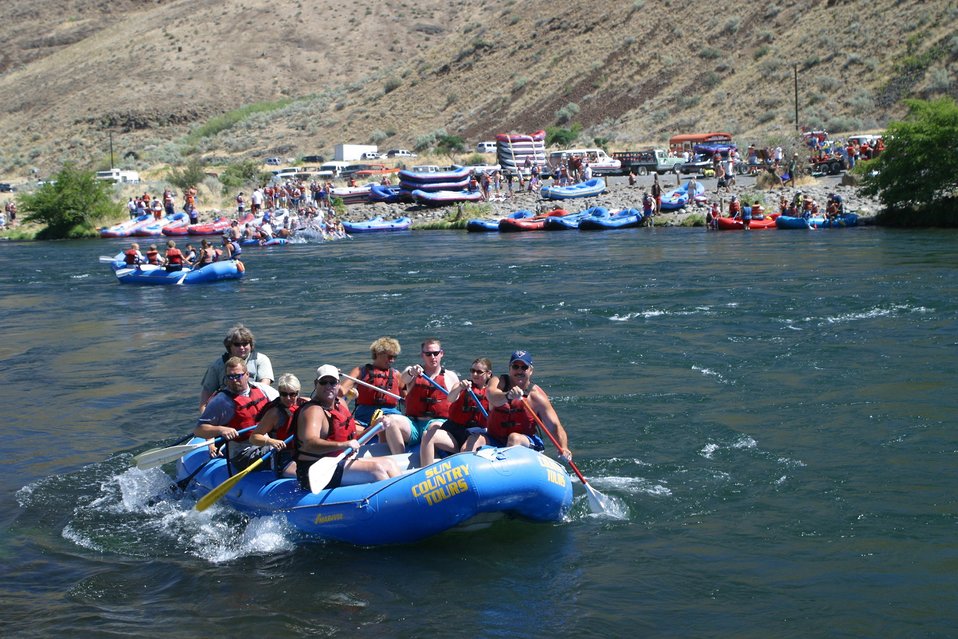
Over 200,000 people a year float the Lower Deshutes River.